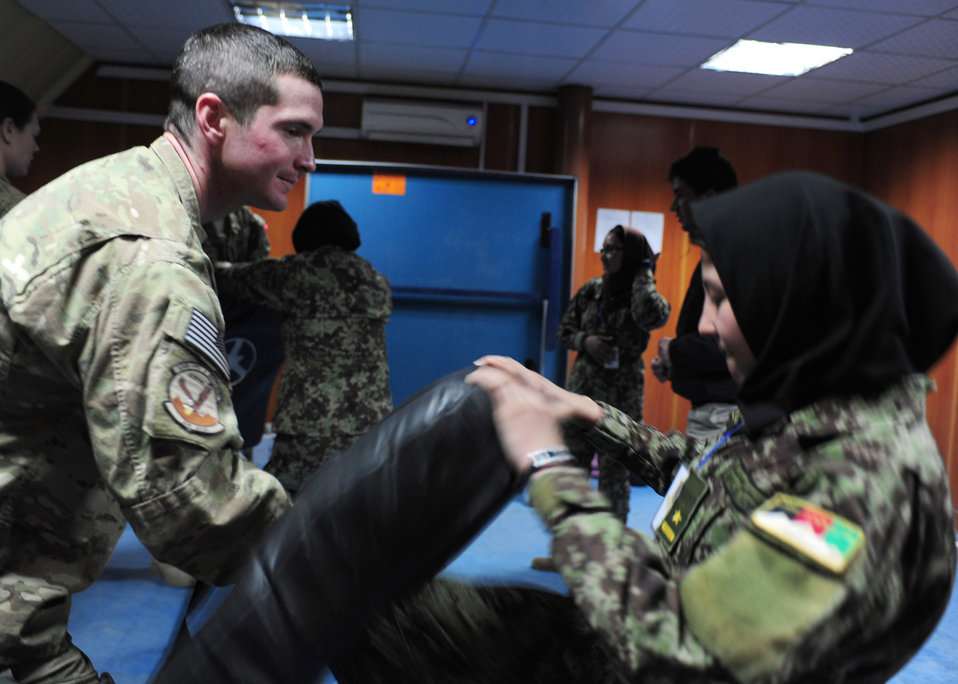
U.S. advisors teach self-defense to Afghan Air Force women

U.S. Air Force Capt. William Boland, a force support officer with the 439th Air Expeditionary Advisory Squadron, instructs Afghan Air Force Lt. Nafisa Adeb on the basic knee strike, which can be used to aid in escaping an attacker, during a women's self-defense class at Kabul International Airport, Afghanistan, Feb. 29, 2012. The training was held to prepare the students physically and mentally for what they may experience if placed in a dangerous scenario.